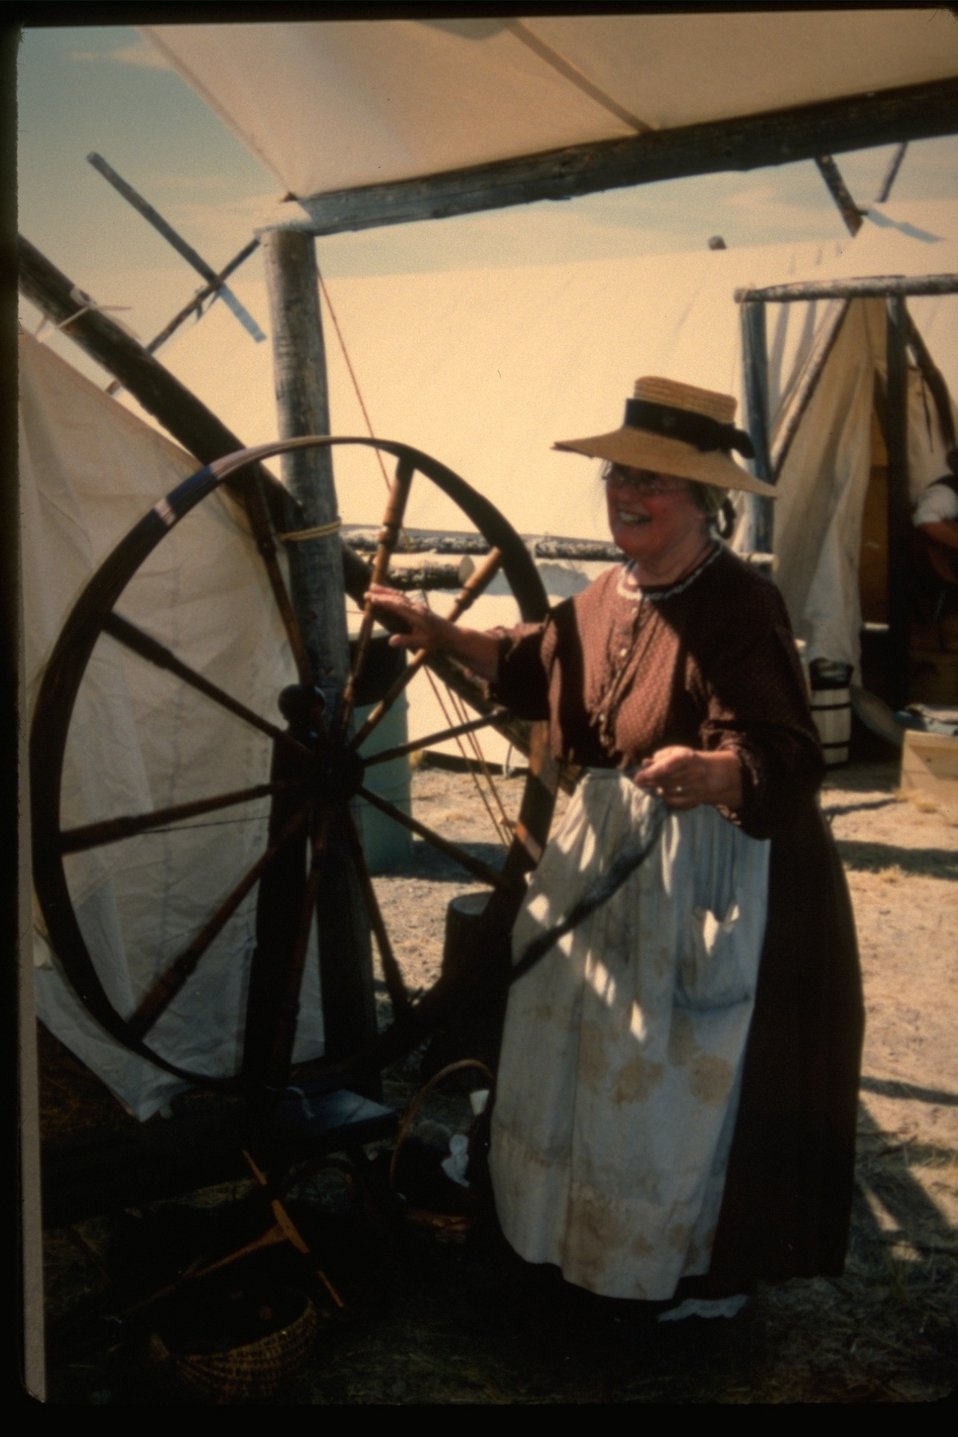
A display of spinning at the Pioneer Festival at the NHOTIC.